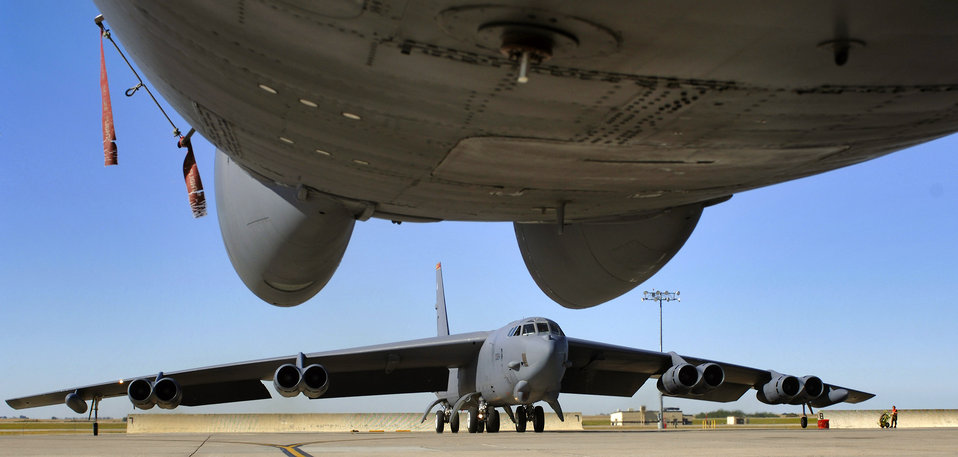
B-52 operations

A B-52 Stratofortress taxis to the runway at Minot Air Force Base, N.D., Aug. 21. The bomber from the 5th Bomb Wing conducted a training mission in the skies over North Dakota.